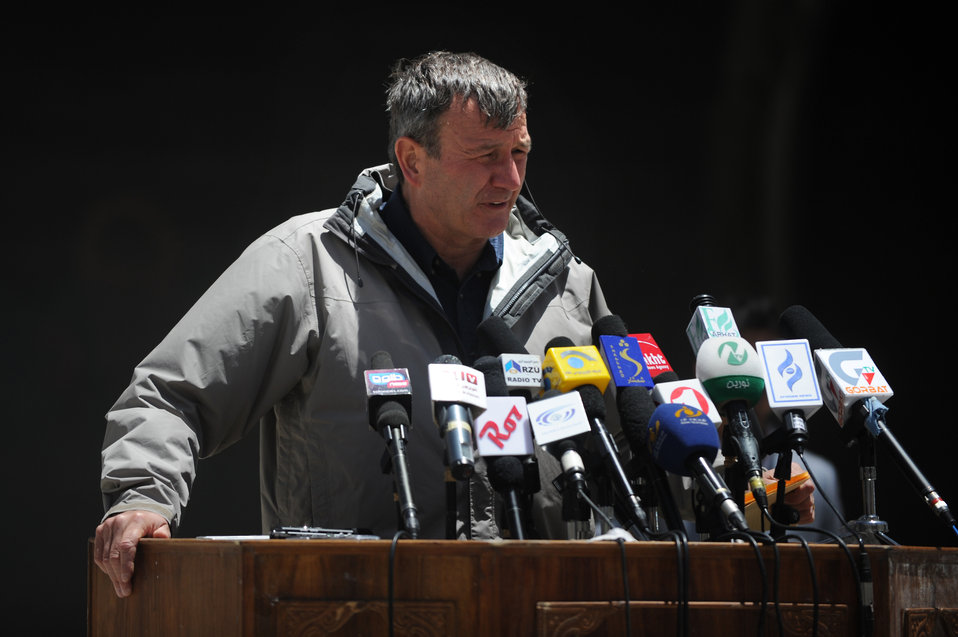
U.S. Ambassador Karl W. Eikenberry makes remarks during a ceremony to mark the beginning of renovations at the Salang Tunnel on the border of Parwan and Baghlan Provinces, Afghanistan, on Wednesday, June 15, 2011. (S.K.Vemmer/Department of State)